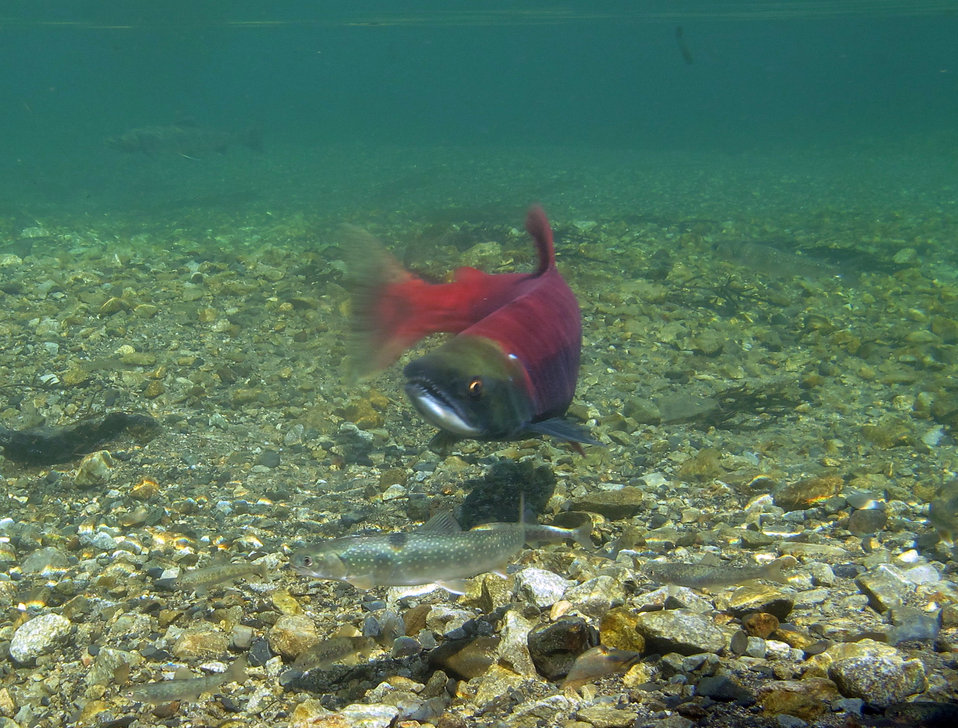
Dollies and sockeye

Dolly Varden char school around a female sockeye salmon on Kodiak Island, Alaska. USFWS/Katrina Mueller